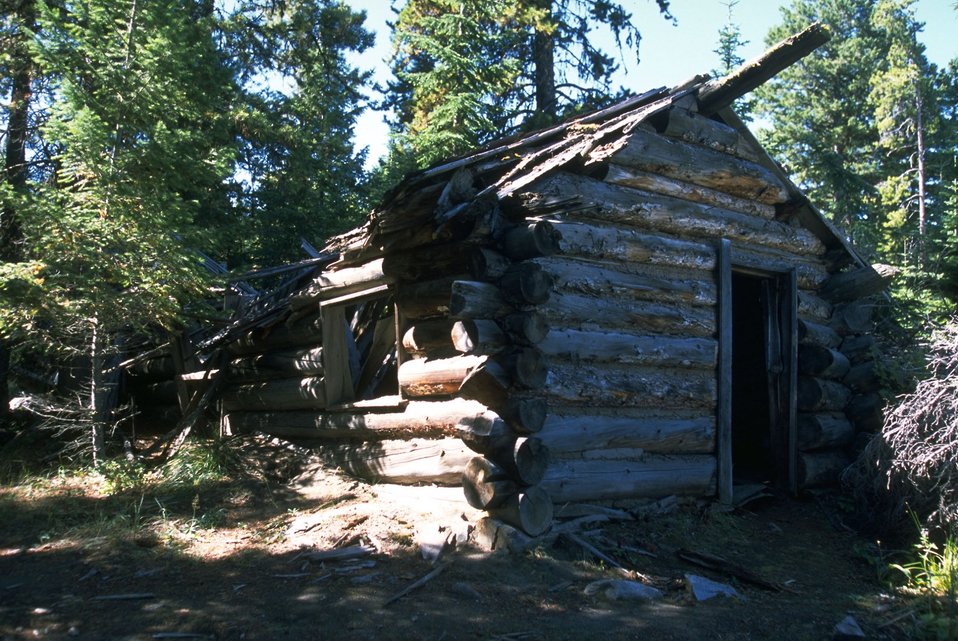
Dilapidated cabing in Coloma Ghost Town